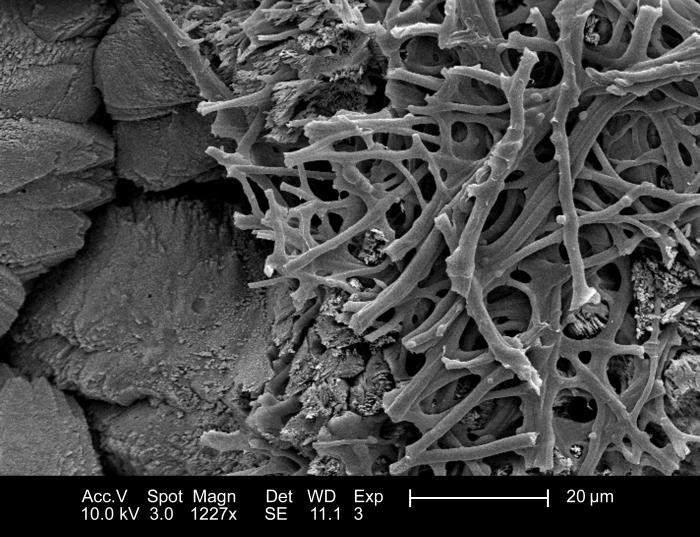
This 2005 scanning electron micrograph (SEM) depicted the morphologic characteristics of the inner surface of an unidentified bird's eggshell. In this view the details revealed included the surfaces of the mammillary cones, and a number of intermammillary pores, i.e., canals that span the distance between the shell's outer cuticle layer, and the interior membranous layers. It is through these pores that the diffusion of gasses takes place. It has been found that the distribution of these pores is directly related to the strength and durability, and the respiratory efficiency of the shell structure on a regional basis. This shell fragment was retrieved from the grounds of the Decatur, Georgia suburbs; Magnified 1227x.